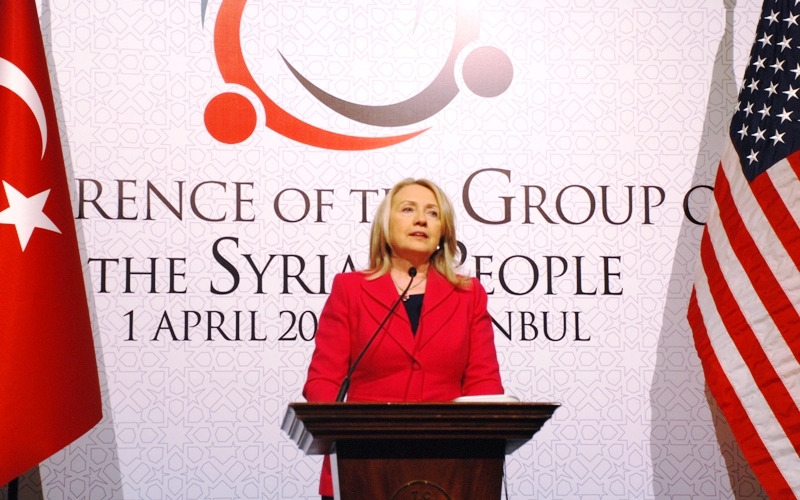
Secretary Clinton Holds a Press Availability After Friends of Syrian People Meeting

U.S. Secretary of State Hillary Rodham Clinton holds a press conference after the Second Conference of the Group of Friends of the Syrian People in Istanbul, Turkey, April 1, 2012.